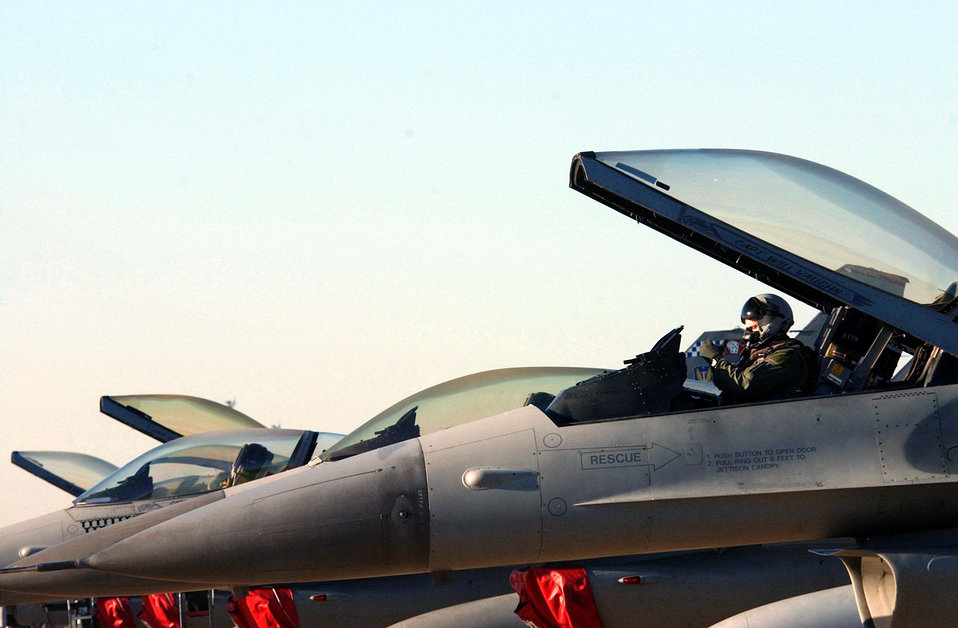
Sea Lion 04-02

SHAW AIR FORCE BASE, S.C. -- An F-16 Fighting Falcon pilot assigned to the 77th Fighter Squadron here prepares for a flying mission during exercise Sea Lion 04-02 on Oct. 30. Sea Lion 04-02 is an operational readiness exercise being conducted here.